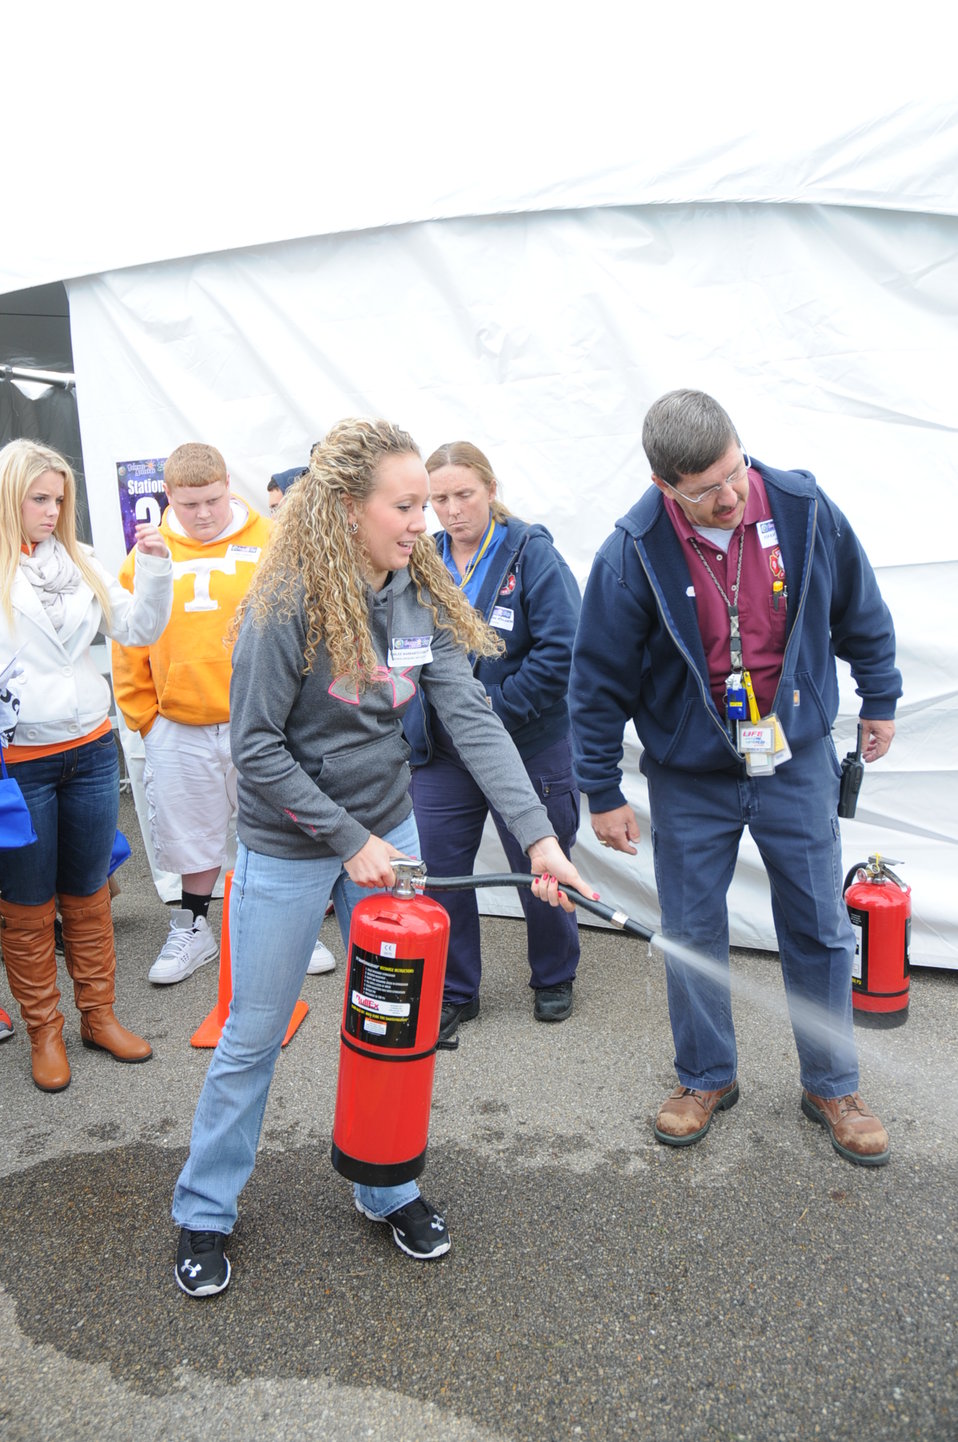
Science Alliance

Emergency Services' Mark Andronis shows a student the proper way to use a fire extinguisher on a blaze.